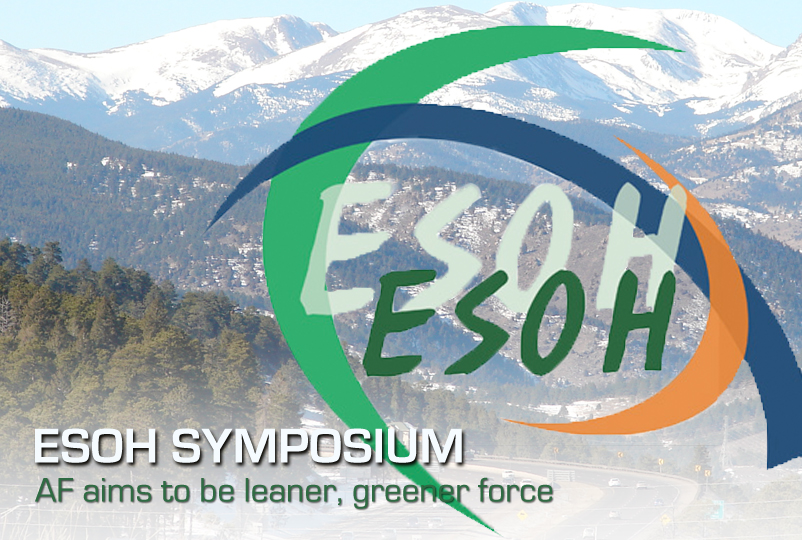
ESOH Symposium